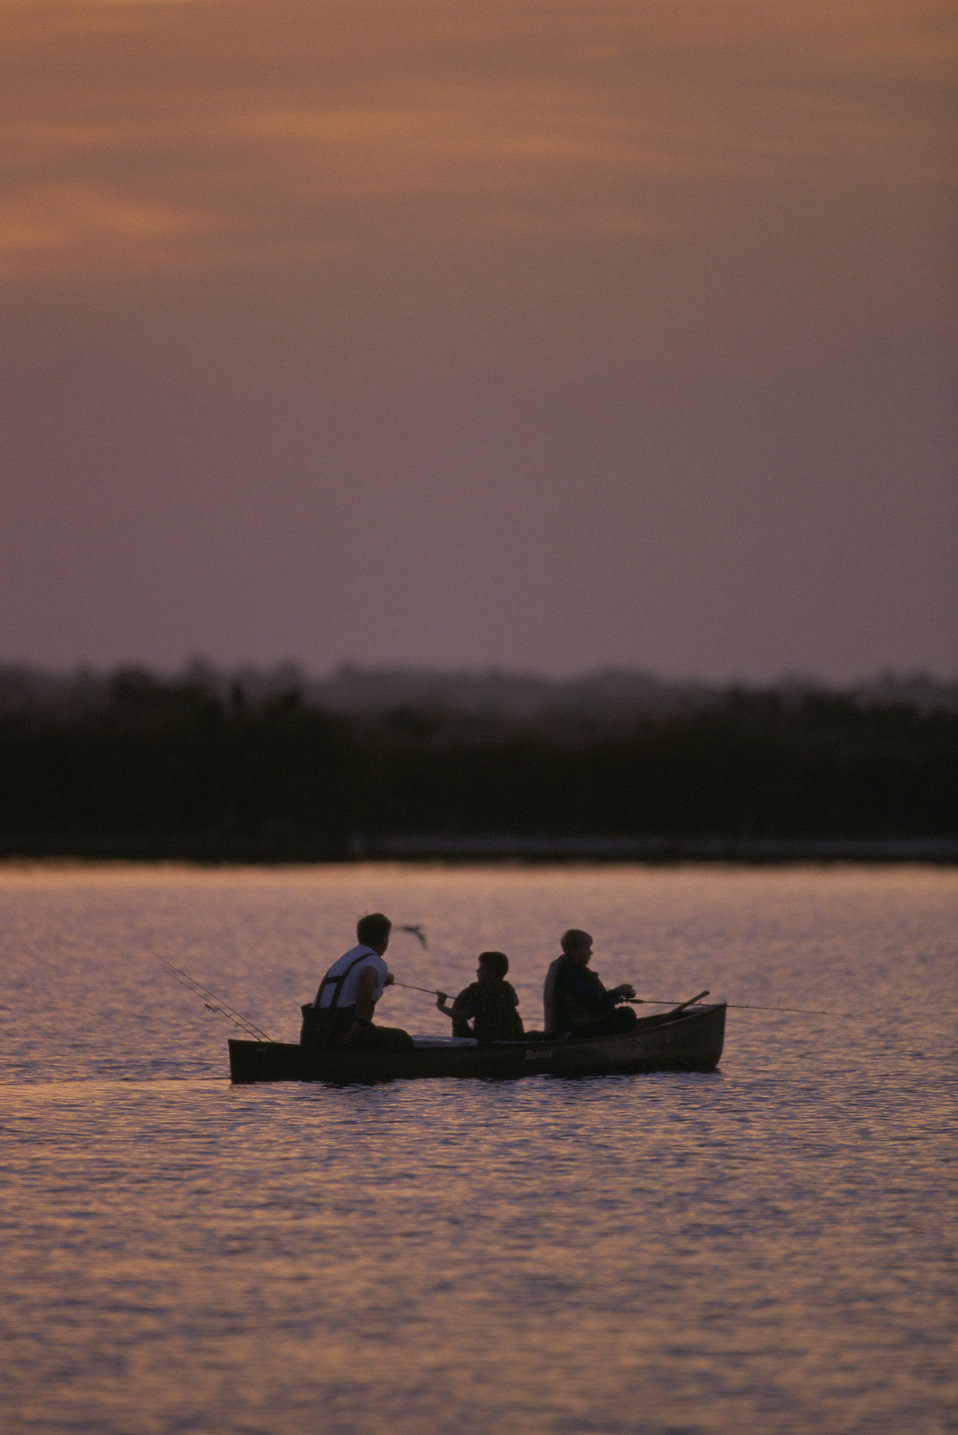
Fishing at Sunset

Photo credit: USFWS/George Gentry

Climate change impacts such as warming water, decreased flows, and depleted oxygen levels are predicted to stress fish populations and impact recreational fishing